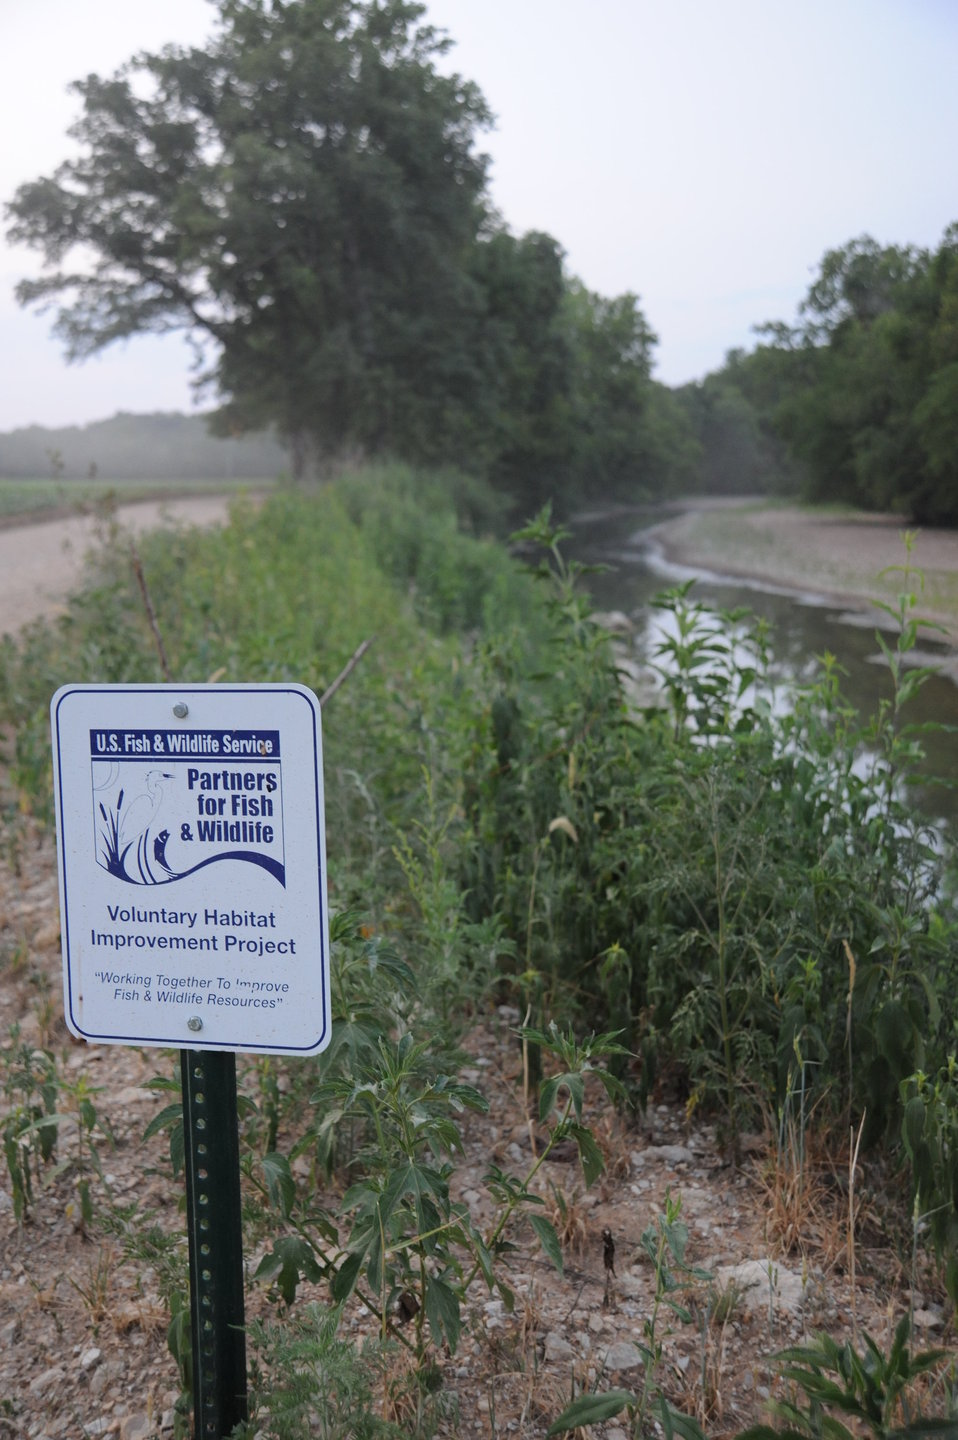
Ambrose - Six Months After

Riparian corridor six months after project completion, looking downstream. The stabilized bank displays successful revegetation.